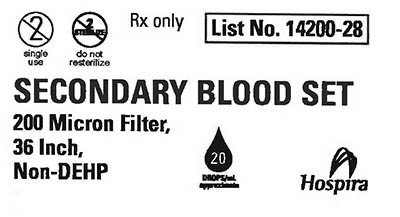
RECALLED – Blood sets used for the administration of blood and blood products

August 13, 2013 – Product Recall – Hospira Issues Important Safety Information for Blood Sets.